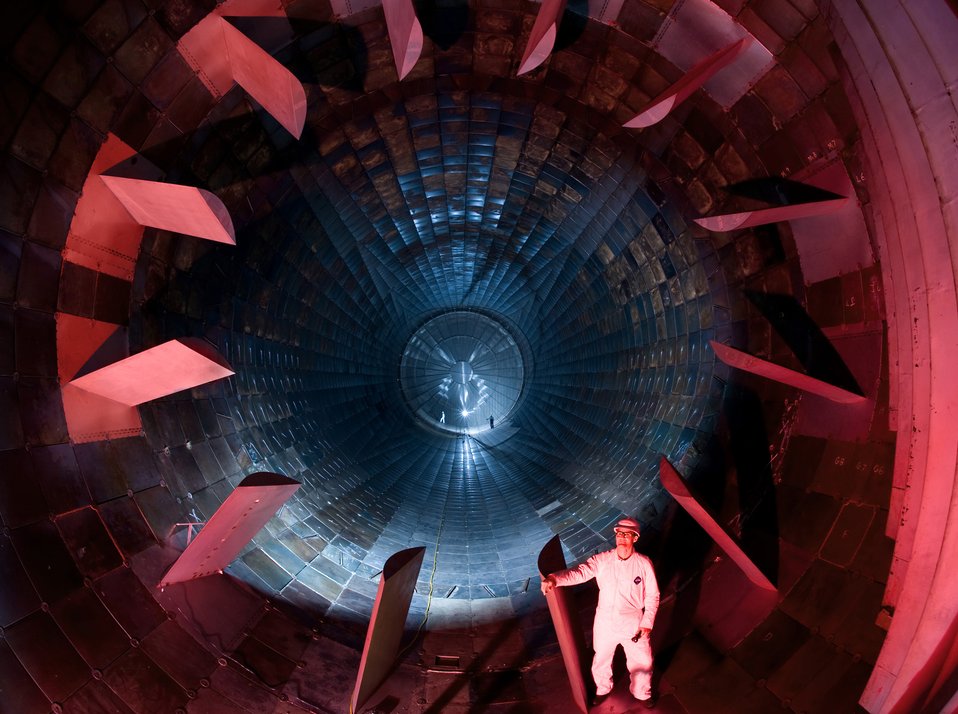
Wind power at Arnold AFB

Inside the diffuser section of the16-foot supersonic wind tunnel, Dr. Richard Roberts checks out the turbine blades during a site visit Oct. 6, 2009 at Arnold Air Force Base, Tenn. Dr. Roberts is the project manager of the von Karman Gas Dynamics Facility and the Propulsion Wind Tunnel Facility located at Arnold Engineering Development Center on Arnold AFB. The wind tunnels have different functions, one simulates transonic speeds and the other supersonic, with 16-foot-square test sections. They are also used for conventional aerodynamic tests.